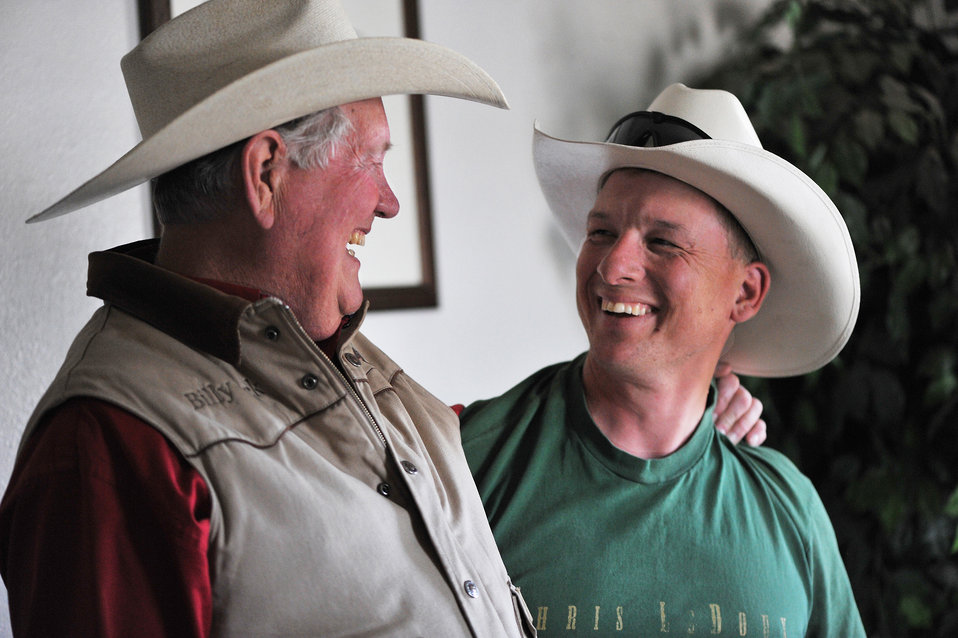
Warrior Wellness Program

U.S. Army Sgt. Dale Chick (right) shares a light moment with Billy Jack Barrett at the equestrian center April 27, 2012, at the U.S. Air Force Academy in Colorado Springs, Colo. Chick said that volunteering at the stables and working with horses help them find inner peace and comfort after being deployed in Iraq and Afghanistan. Barrett is the director of the center.